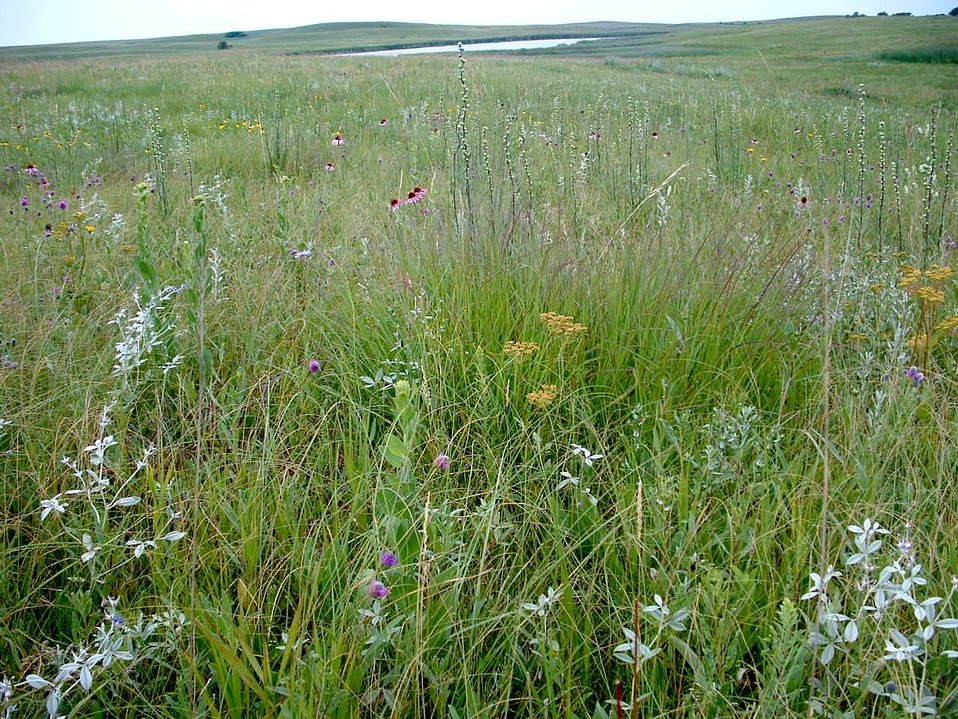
Prairie beauty

There is nothing that compares to a native prairie with its ever changing view of flowers, grasses, insects, birds, and weather. North Lamee WPA in Marshall County, SD.